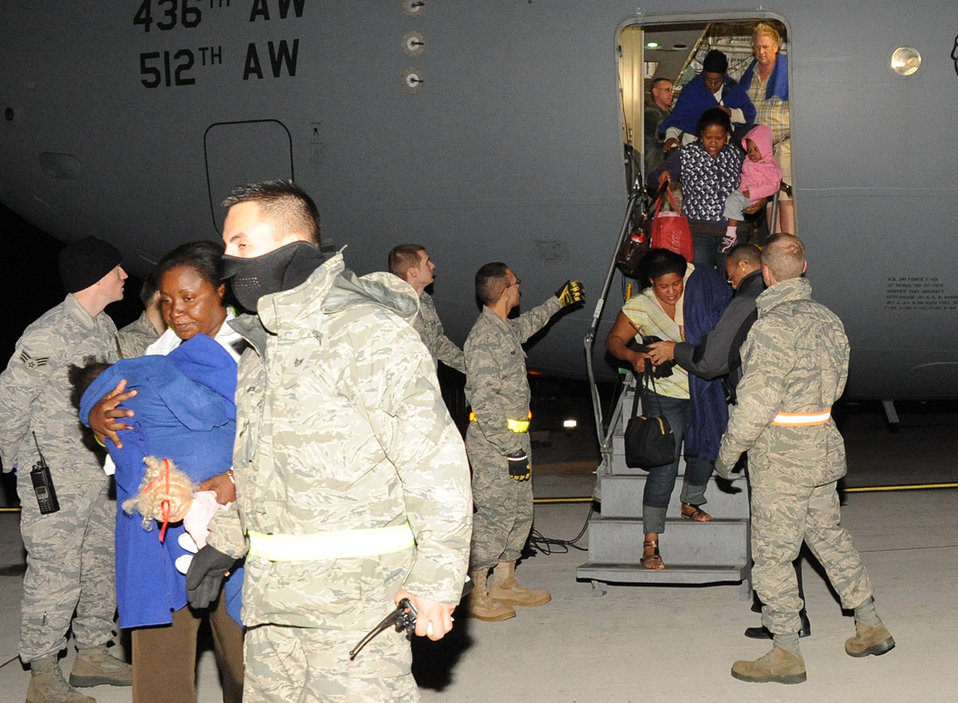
Haiti evacuees at JB MDL

JOINT BASE MCGUIRE-DIX-LAKEHURST, N.J. –Airmen help evacuees from Haiti as they arrive here Saturday. More than 500 survivors of Tuesday’s earth quake have arrived at the joint base since the first evacuees arrived Friday morning.